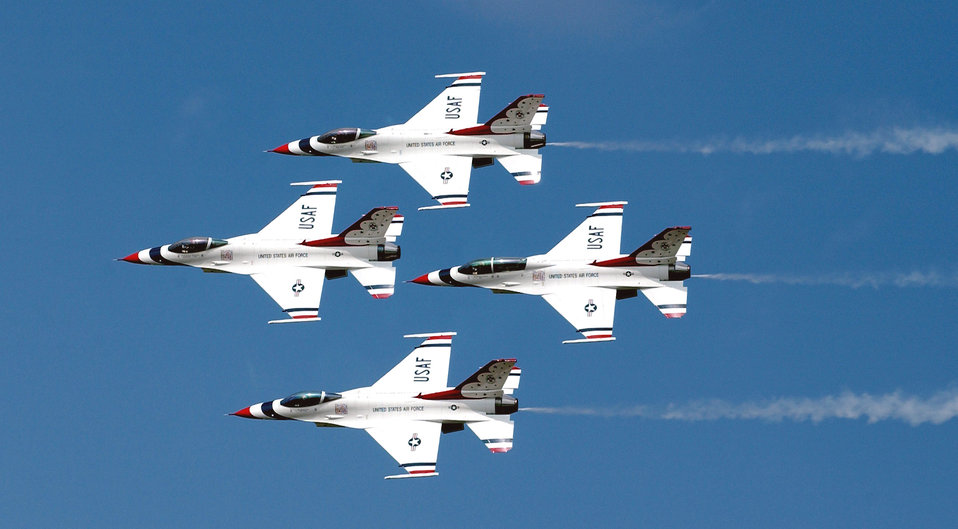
Diamond formation

BARKSDALE AIR FORCE BASE, La. -- The U.S. Air Force Thunderbirds perform at the 2003